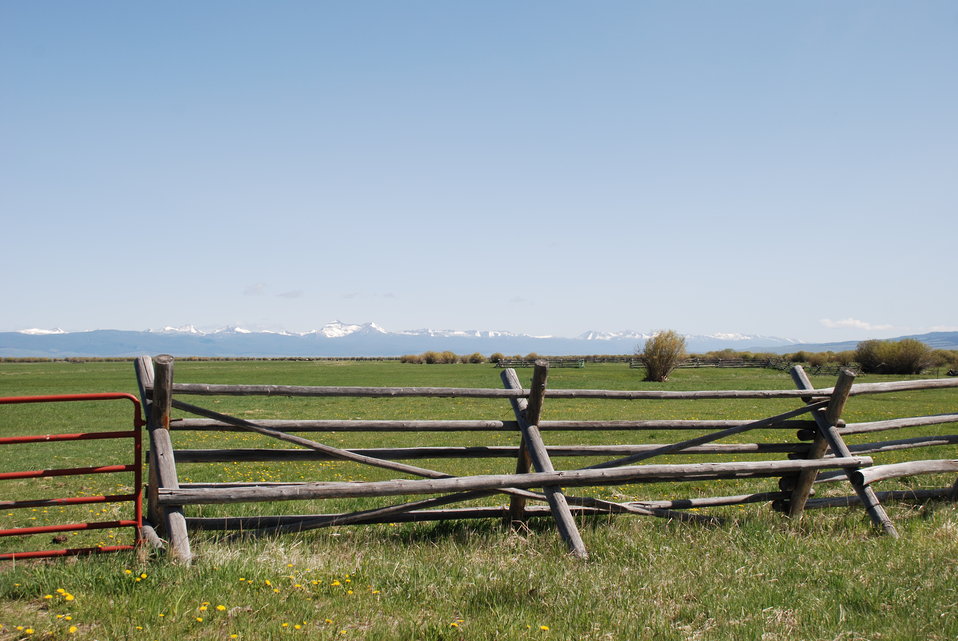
Regional Leadership Visit to Montana 2014